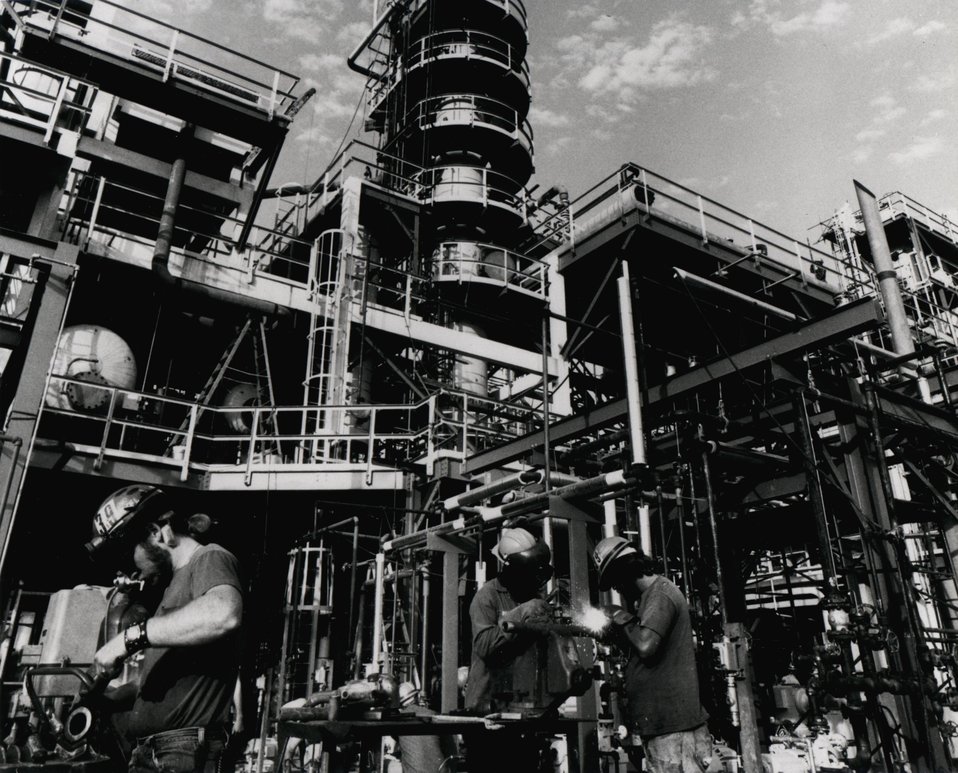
Construction progress of Donor Solvent Coal Liquifaction 250 tons per day Pilot Plant, at Baytown, Texas. Circa 1980.